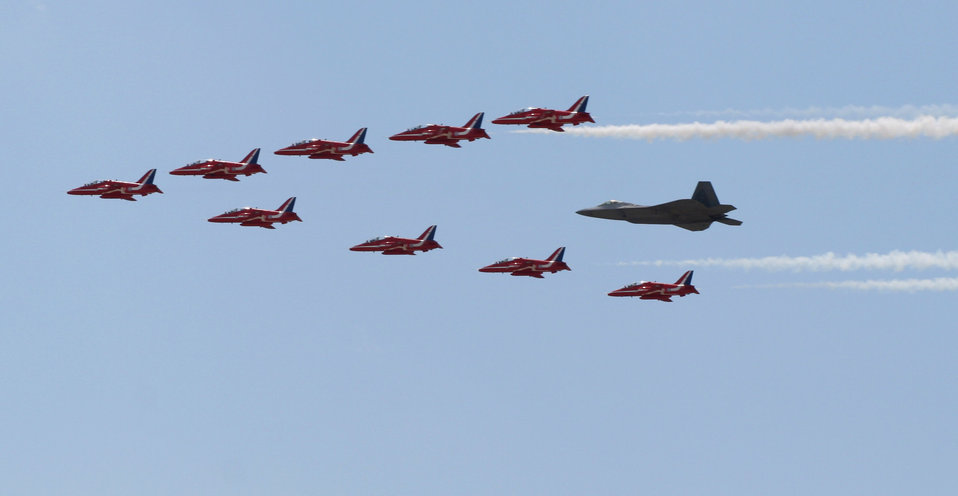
Raptor joins Red Arrows

Maj. Paul Moga in an F-22 Raptor flies in formation with the Royal Air Force Aerobatic Team, The Red Arrows, during an afternoon practice flight June 18 at Langley Air Force Base, Va. The aircraft will perform at AirPower over Hampton Roads, the Langley AFB airshow, which is scheduled for June 20 to 22. Major Moga is an F-22 Demonstration Team pilot.